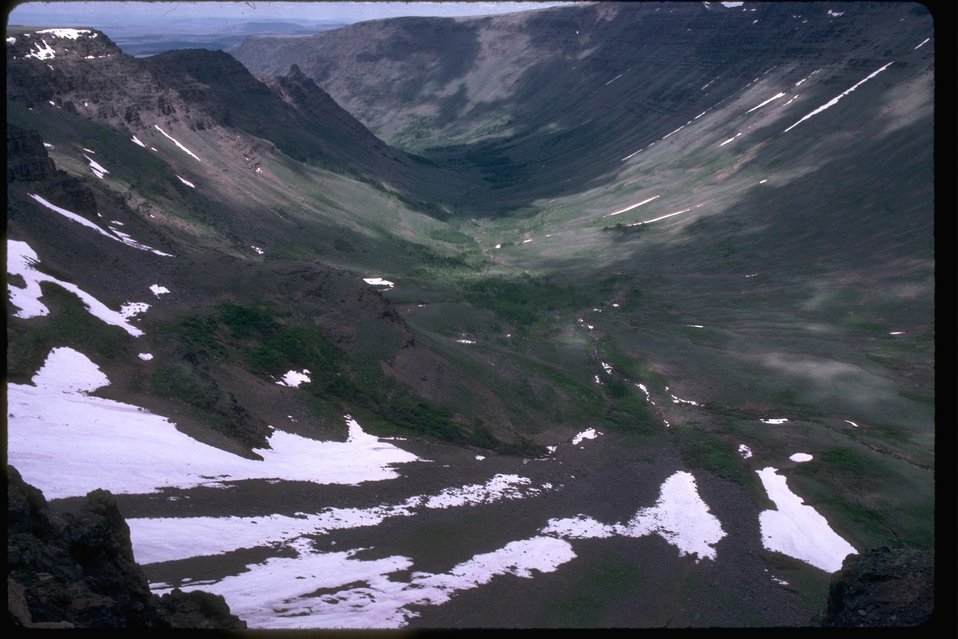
Kiger Gorge Overlook.